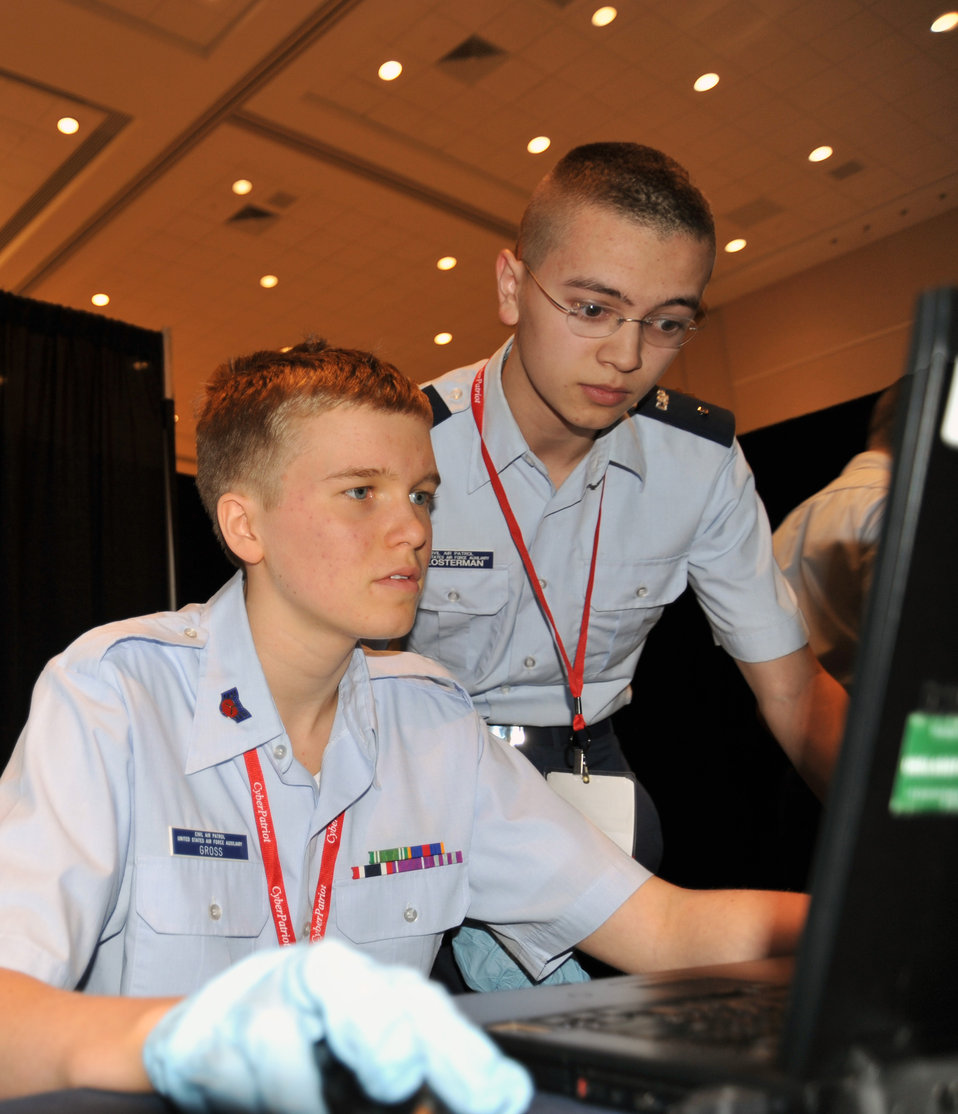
Cyber sleuths

Civil Air Patrol Cadet Staff Sgt. Tyler Gross, left, and Cadet 2nd Lt. Daniel Klosterman try to crack a computer password during the digital forensics test at the CyberPatriot IV competition at the National Harbor, Md., March 23, 2012. The cadets were tasked to find and examine evidence at a simulated cyber-crime scene, including frisking a suspect for electronic devices that contained possible clues of the password. Gross and Klosterman are with the Civil Air Patrol Big Sioux Squadron in Brookings, S.D.